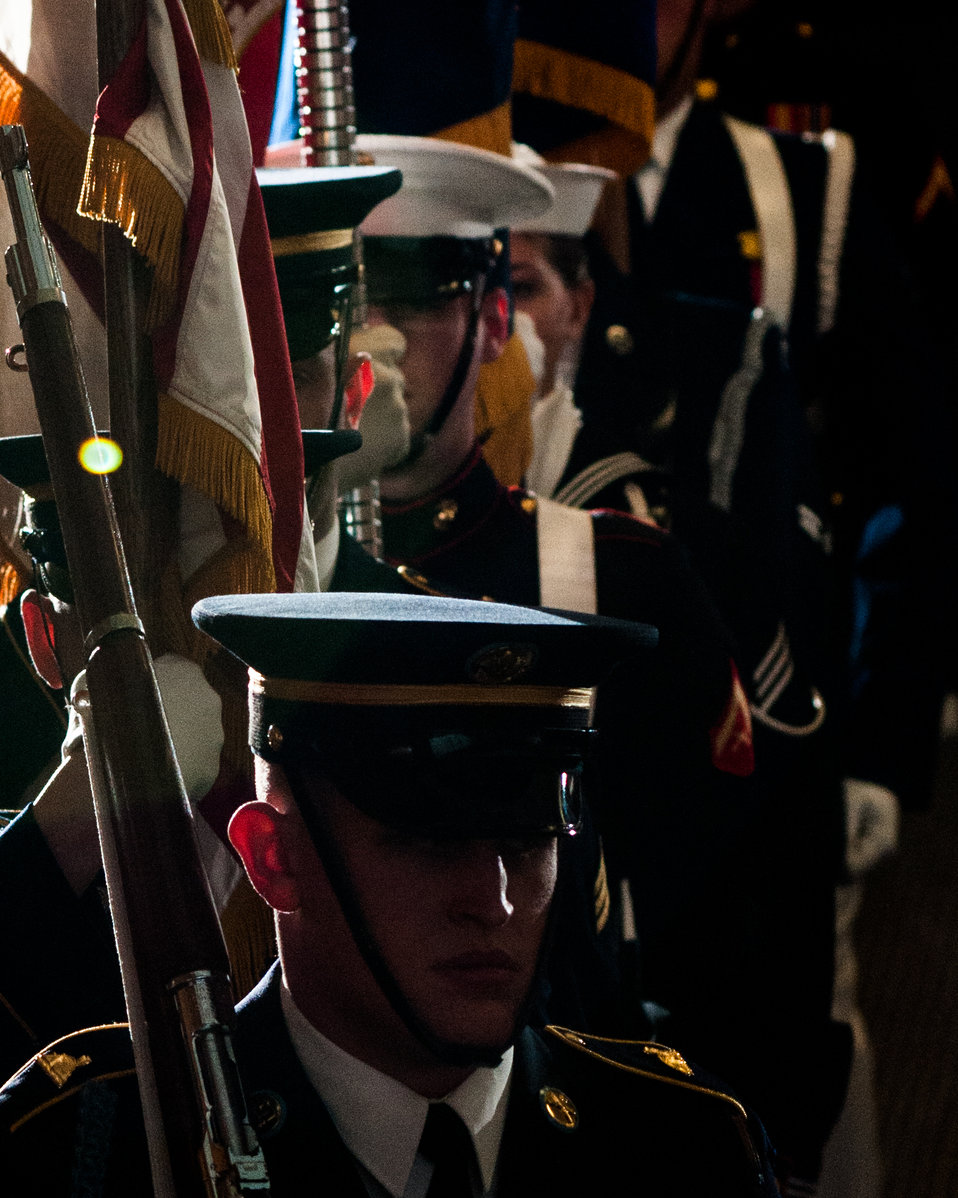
The U.S. Military District of Washington Joint Armed Forces Color of Guard provides the Presentation of Colors at the 2013 Women’s History Month Observance in the Jefferson Auditorium, during the “Women Inspiring Innovation Through Imagination: Celebrating Women in Science, Technology, Engineering, and Mathematics” event, on Thursday, March 21, 2013, in Washington, D.C. Some people audience notices that the Navy Color Guard is female.